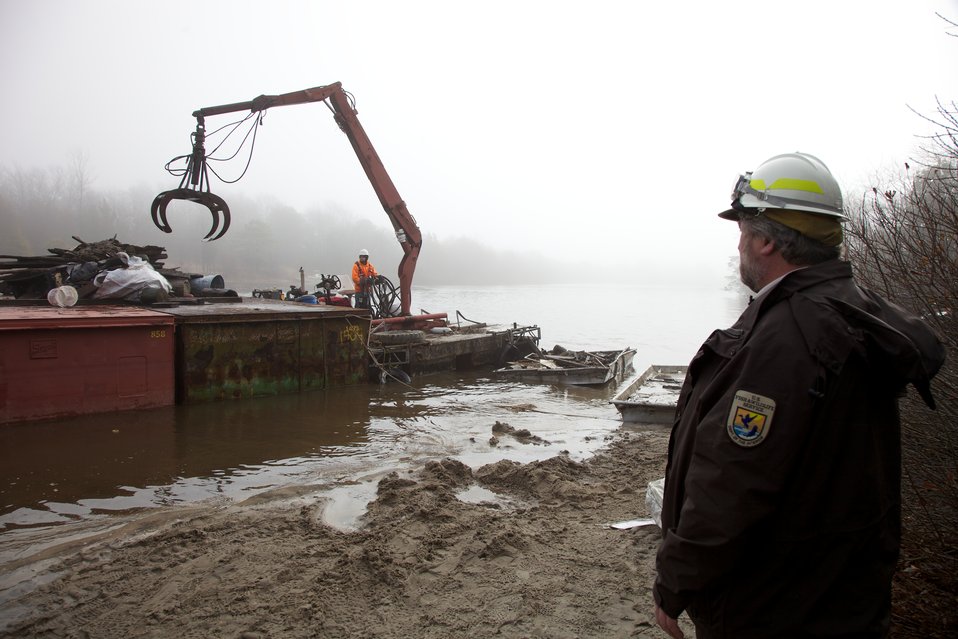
Forsythe NWR debris cleanup

FWS contract administrator Mike Durfee observes water-based debris removal at E.B. Forsythe National Wildlife Refuge.